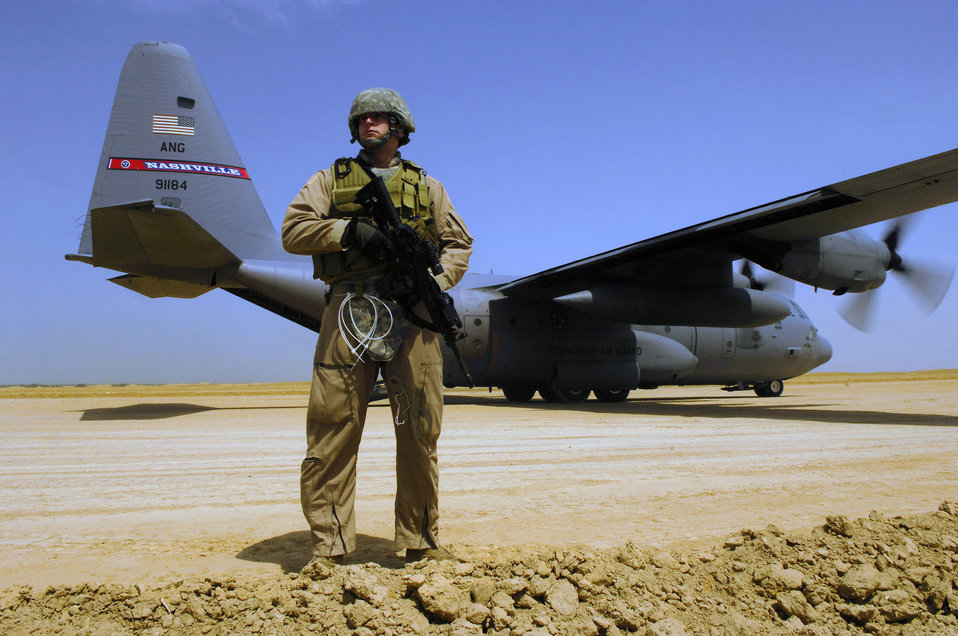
April 20 airpower summary: C-130s transport cargo

Senior Airman Matt Cooper provides security for a C-130 Hercules aircraft April 18, during a cargo mission in Afghanistan. SrA Cooper is part of a Fly Away Security Forces Team assigned to the 455th Expeditionary Security Forces and deployed from the 355th Security Forces Squadron, Davis-Monthan Air Force Base, Ariz. The C-130 is the prime transport for air dropping troops and equipment into hostile areas.